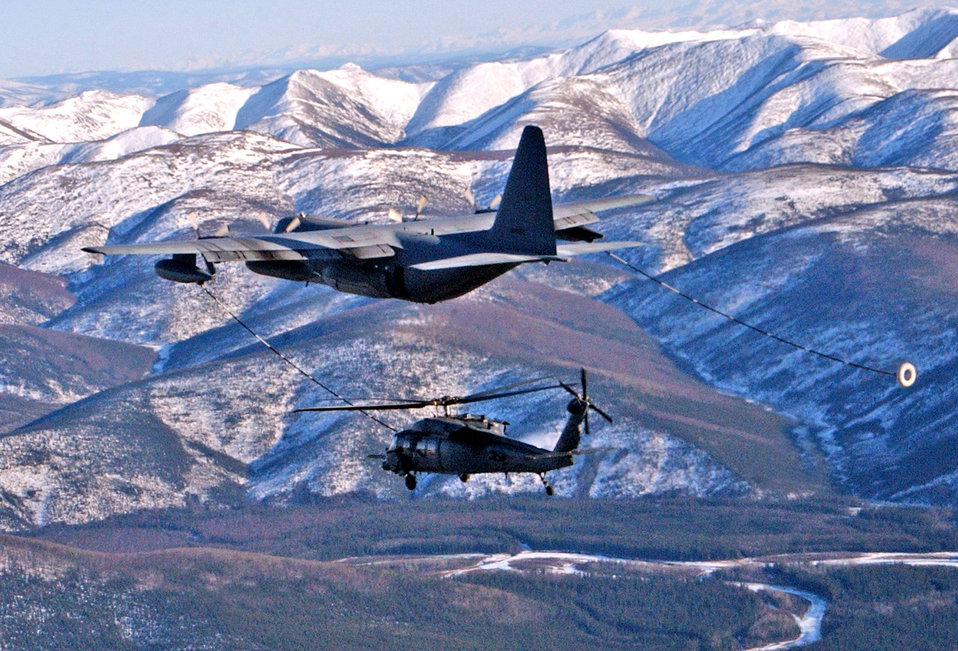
Alaska range, airspace critical to combat training

An HC-130 Hercules refuels an HH-60G Pave Hawk helicopter April 17 during a combat search and rescue training mission Red Flag-Alaska 07-1 at Eielson Air Force Base, Alaska. The helicopters are assigned to the 210th Rescue Squadron Det. 1.